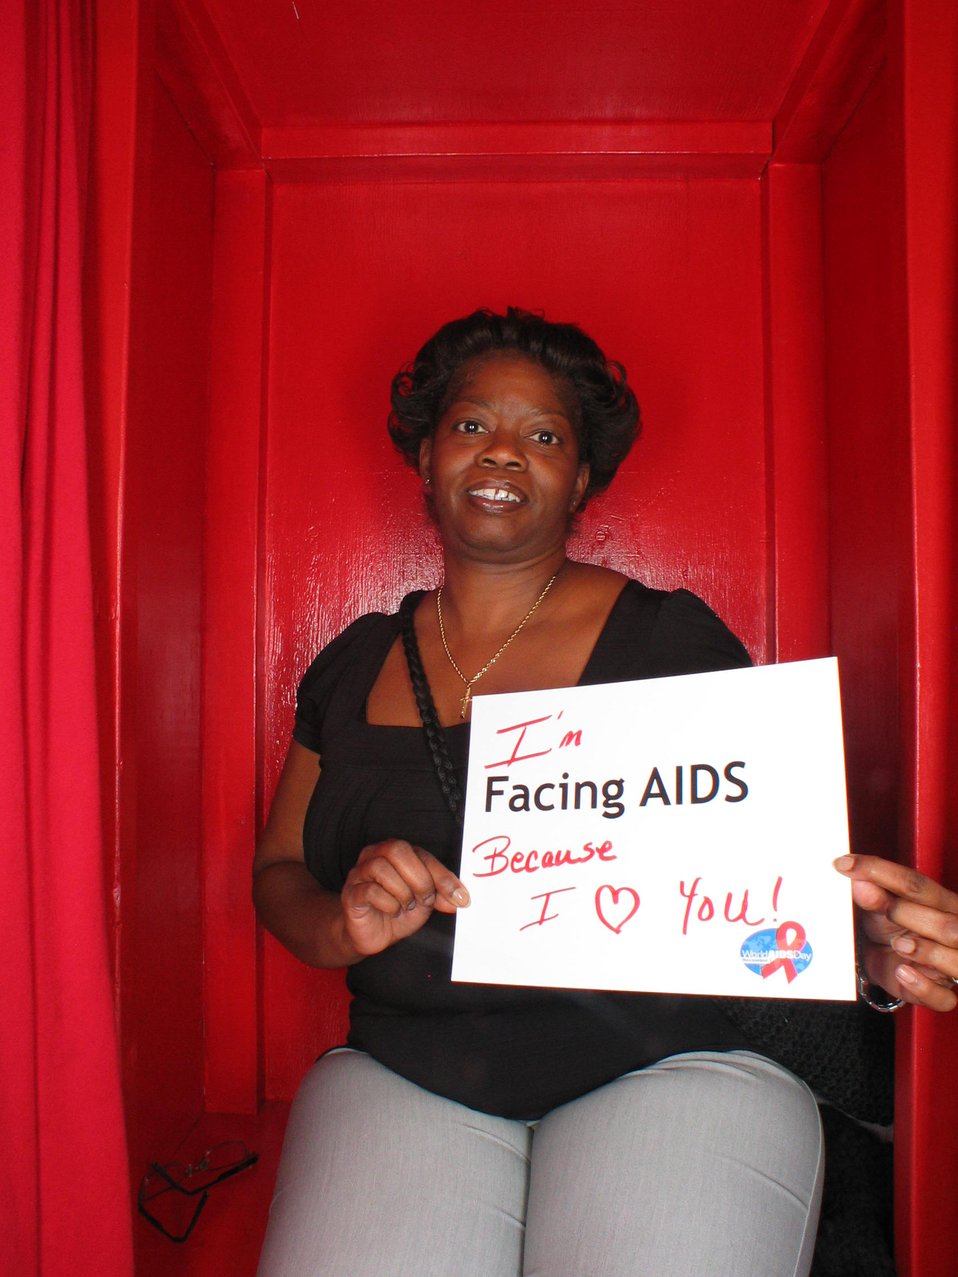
I'm Facing AIDS because I love you!